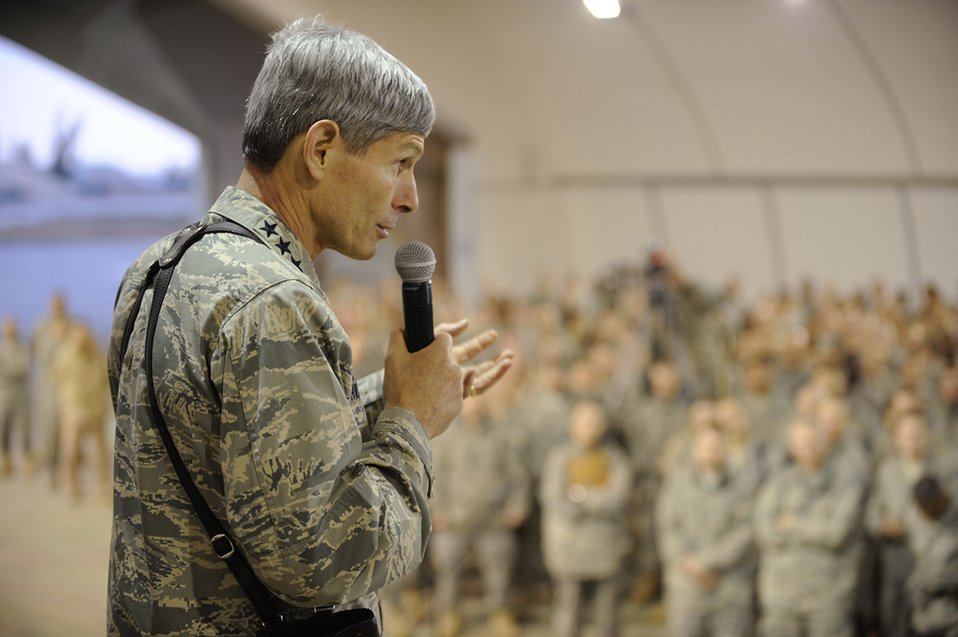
Joint Expeditionary Tasking (JET)

Air Force Chief of Staff Gen. Norton Schwartz speaks at an Airman's Call at Joint Base Balad, Iraq, during a recent tour of Southwest Asia installations. General Schwartz announced Dec. 17 that an Airman previously categorized as filling an